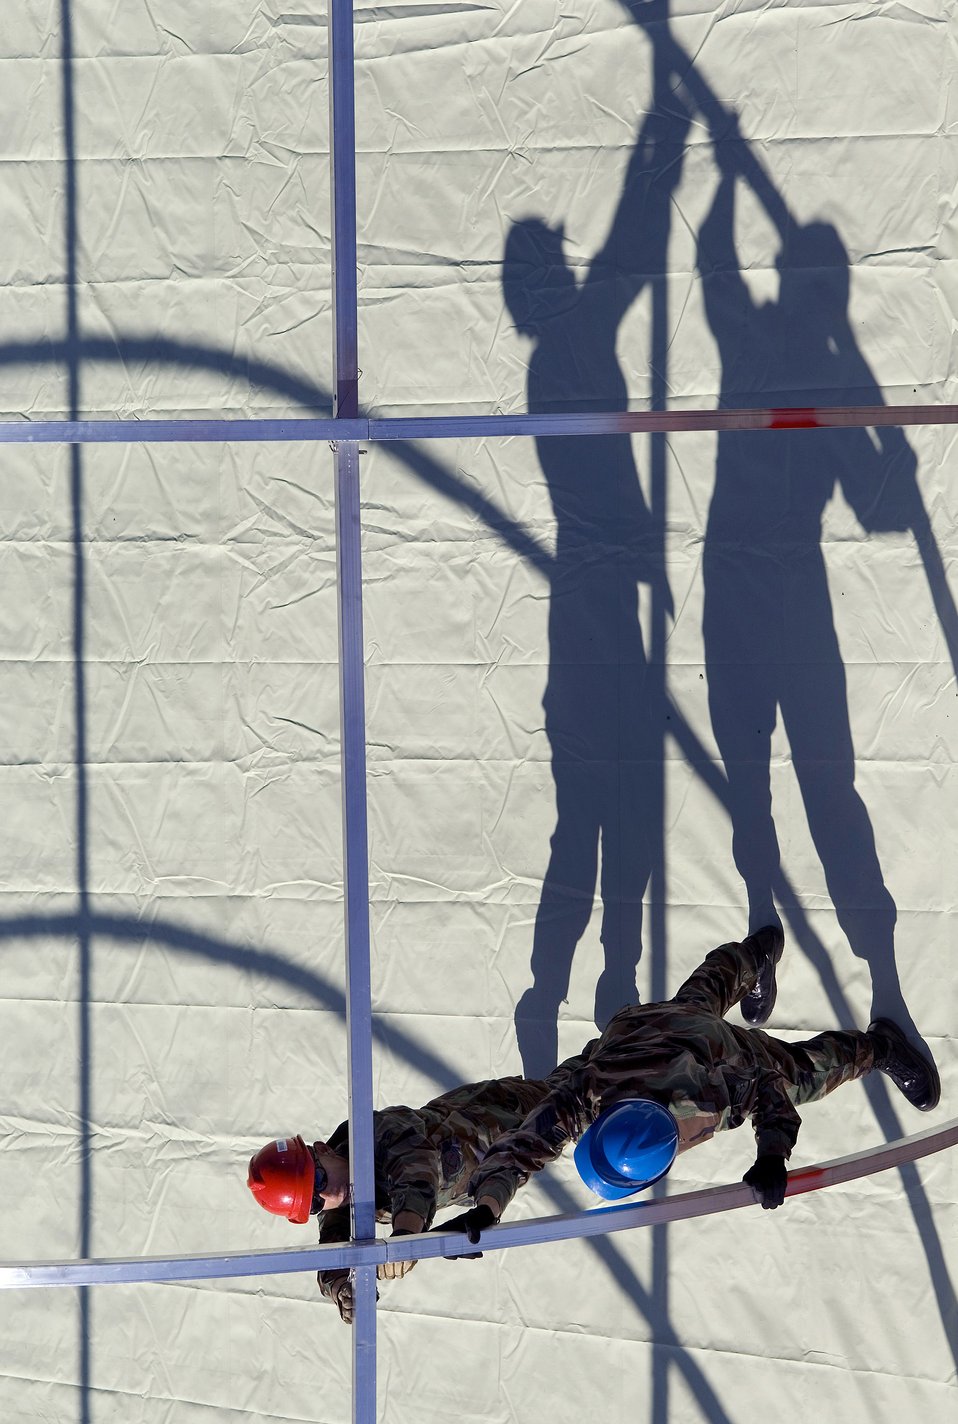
Providing shelter is a BEAR

Airmen from the 49th Material Maintenance Group work to build a small shelter system during a Jan. 16 exercise at Holloman Air Force Base, N.M. Members of the 49th MMG can build a Basic Expeditionary Airfield Resource, or BEAR, in austere conditions anywhere in the world. Airmen of the 49th MMG maintain a constant state of readiness and can be tasked to support any Department of Defense or Federal Emergency Management Agency humanitarian operations along with primary duties of supporting combat operations.